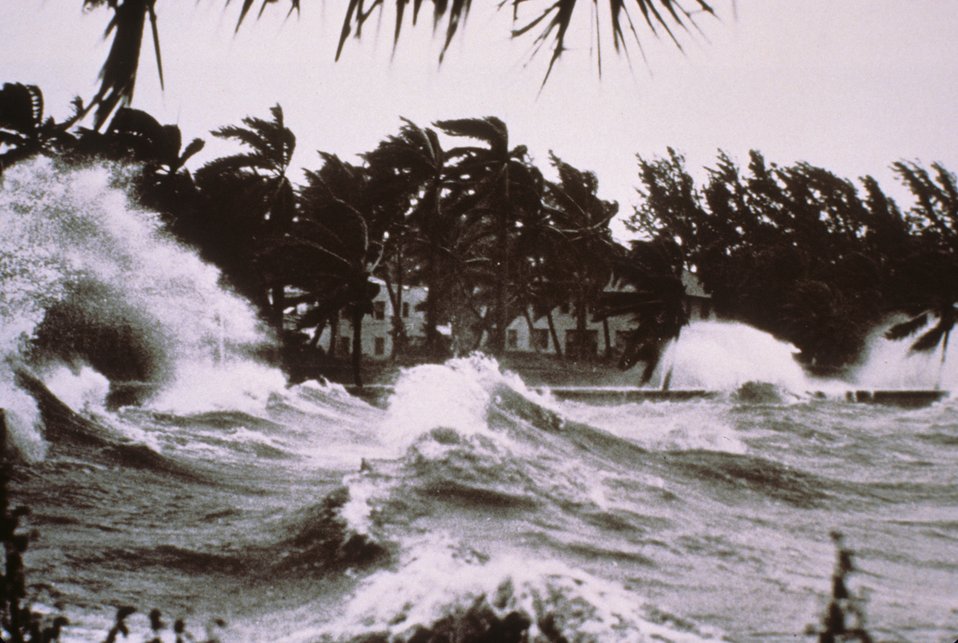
Tropical storm waves batter a palm-tree graced shoreline.